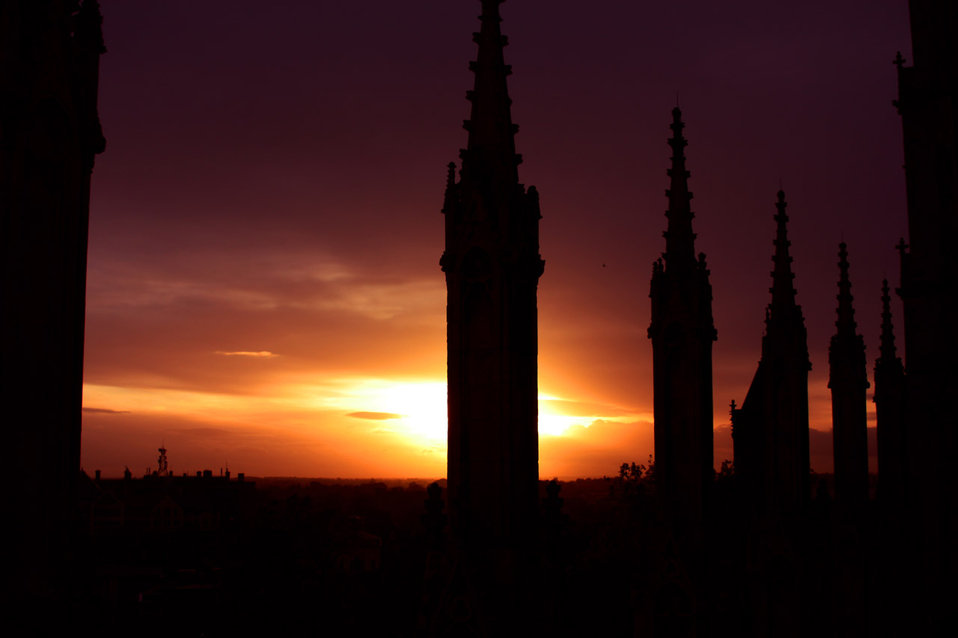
Sky

Cathedral in york.